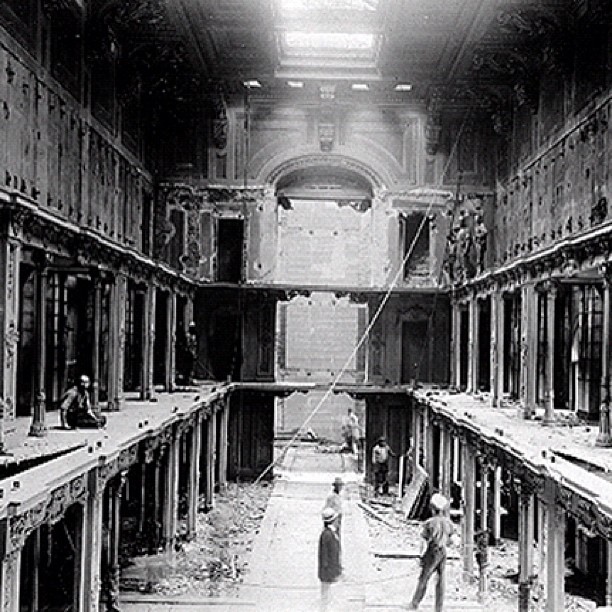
@librarycongress moved out of Capitol #onthisday 1897. Pic: the abandoned space before reconstruction into 3 floors.